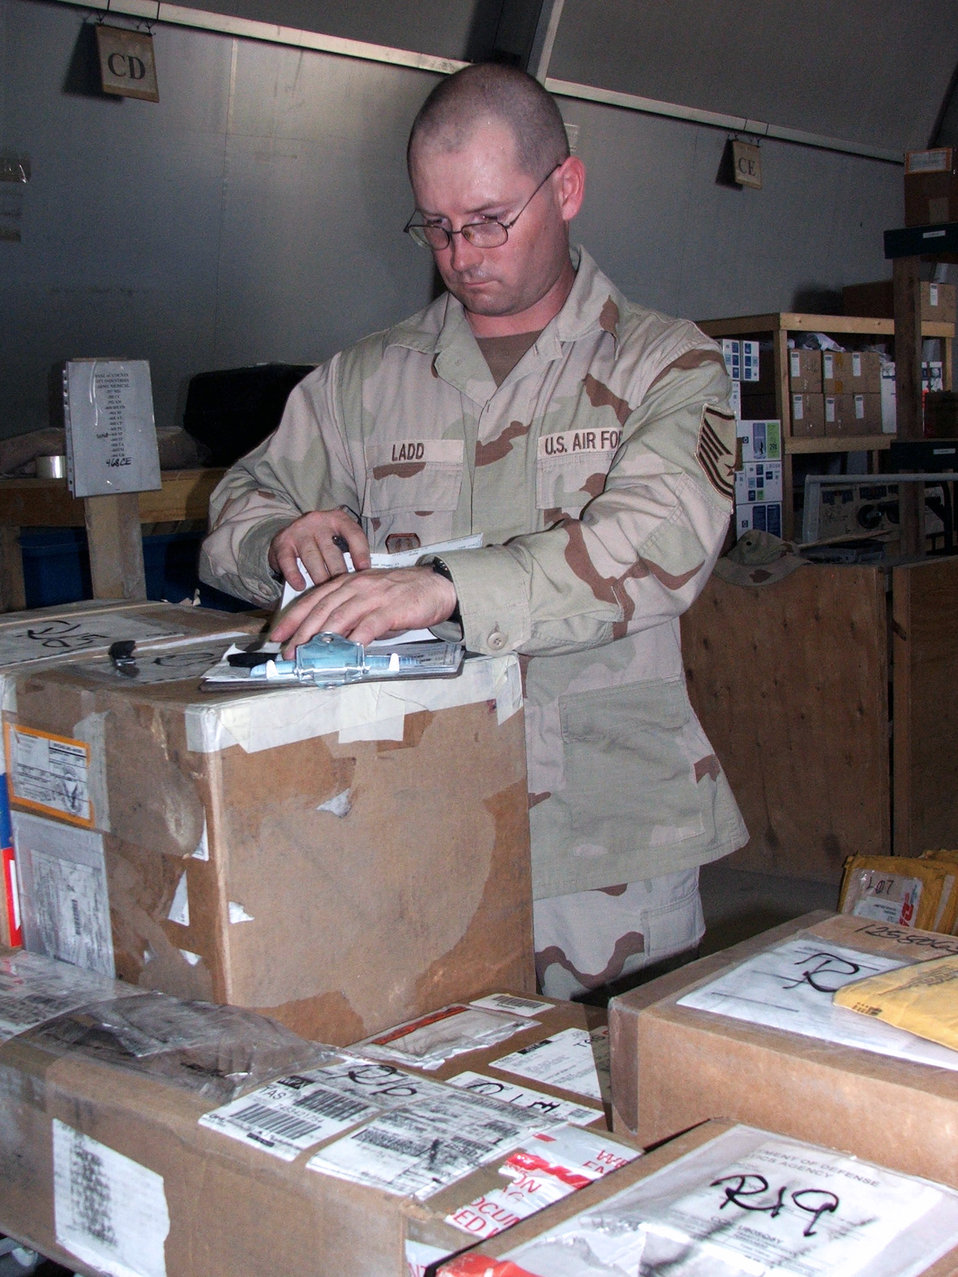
Expeditionary supply technicians order up success

KARSHI-KHANABAD AIR BASE, Uzbekistan -- Master Sgt. Bill Ladd checks in cargo in the supply warehouse here April 26. He is the superintendent for the 416th Expeditionary Mission Support Squadron's supply section and is deployed from Grand Forks Air Force Base, N.D.